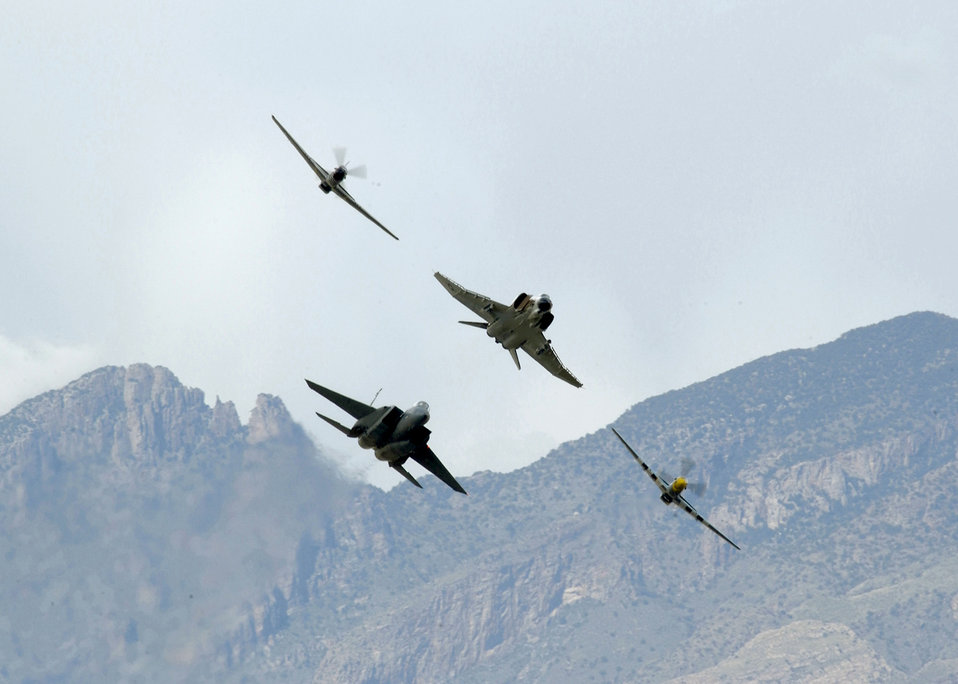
Formation flying

OVER DAVIS-MONTHAN AIR FORCE BASE, Ariz. -- Two P-51 Mustangs, a visiting F-4 Phantom II, and an F-15E Strike Eagle fly in formation at the 2005 Heritage Flight Conference here. The Heritage Flight program was established in 1997 supporting the Air Force's 50th anniversary. It involves today's state-of-the-art fighters flying in close formation with World War II and Korean War vintage fighters. The flight is designed to safely display the evolution of U.S. Air Force airpower and support Air Force's recruiting and retention efforts.